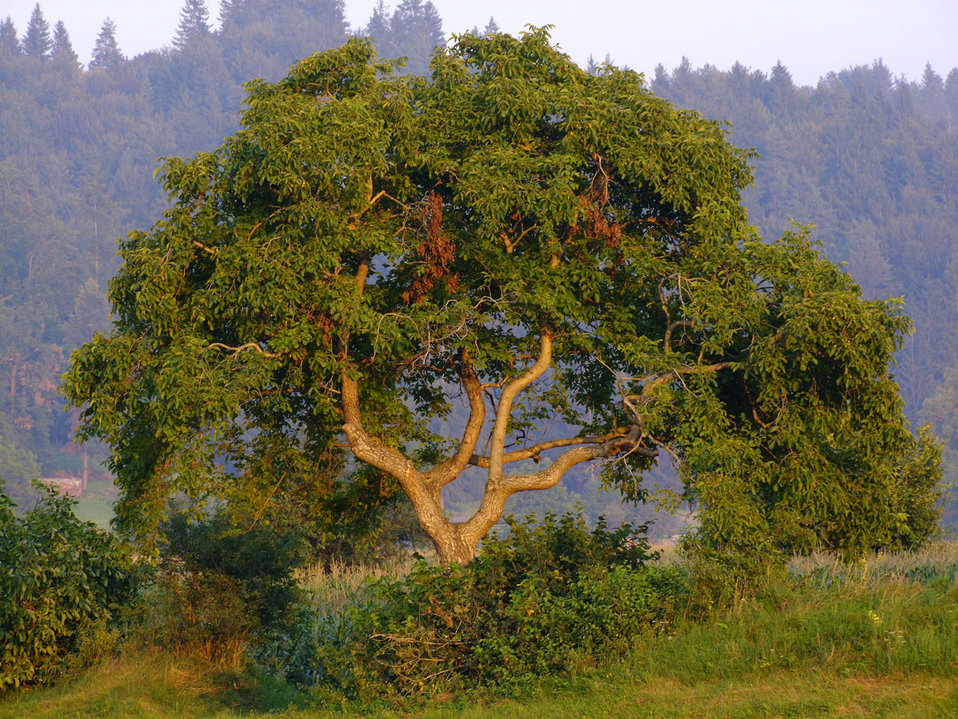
City of birds

Birds like it, it's special, it's beautiful, it's big.